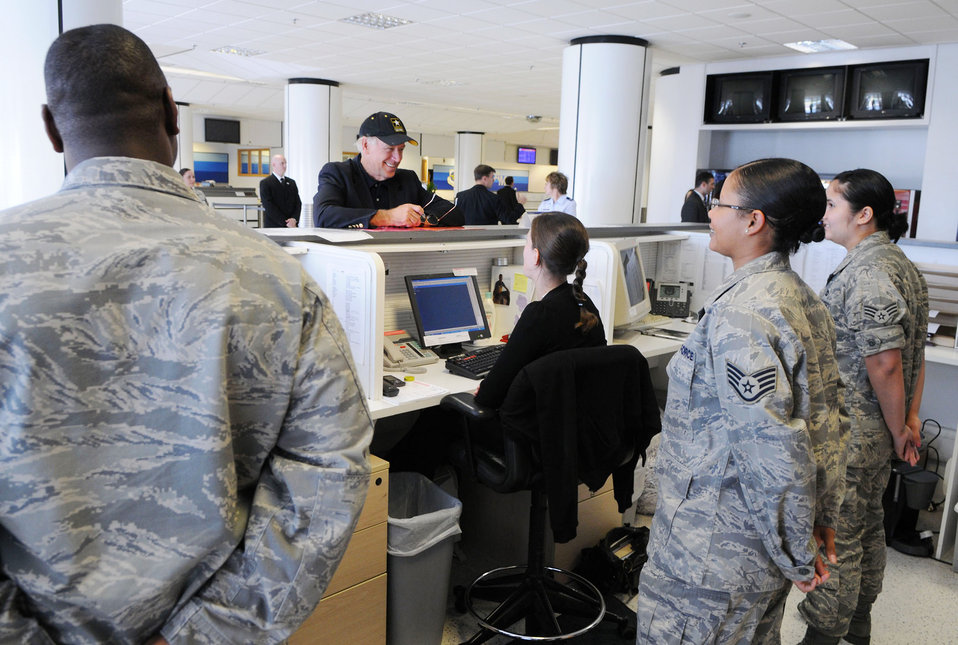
Vice president visits RAF Mildenhall, meets Airmen

Vice President Joe Biden talks with Airmen and civilians July 2 in the passenger terminal at Royal Air Force Mildenhall, England. The vice president stopped at the base for a few hours en route to an unspecified location.